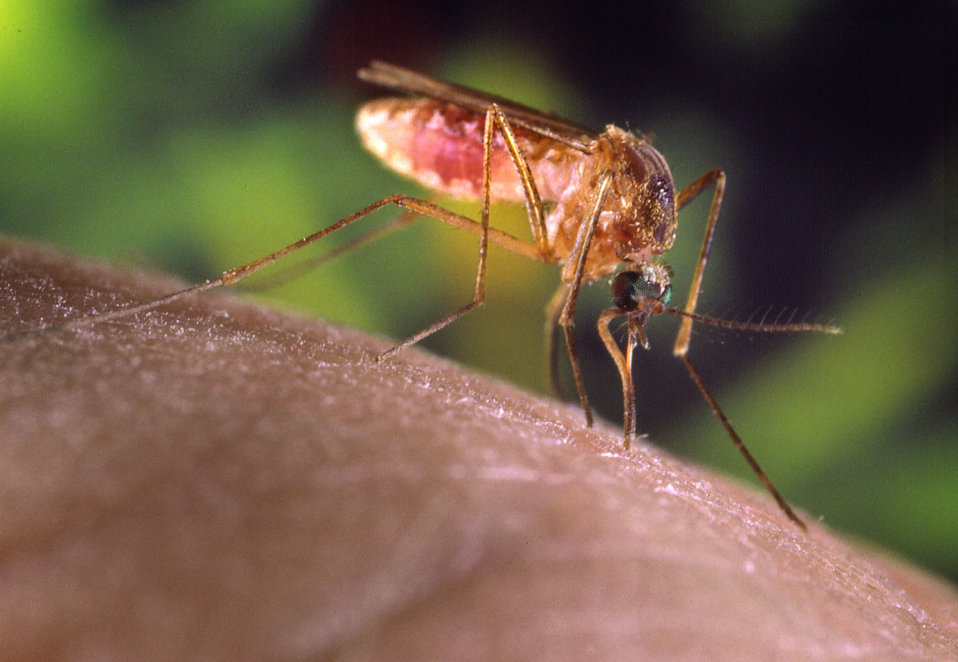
A Culex quinquefasciatus mosquito on a human finger.